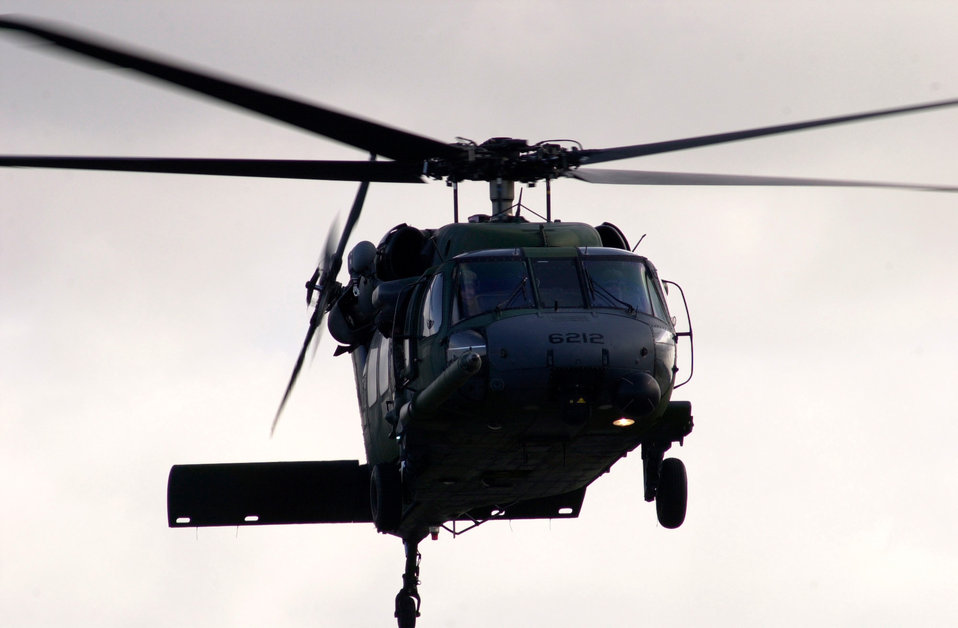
Hovering

OPERATION IRAQI FREEDOM -- An Air Force HH-60G Pave Hawk hovers over a landing site April 2 at a forward-deployed location supporting Operation Iraqi Freedom.